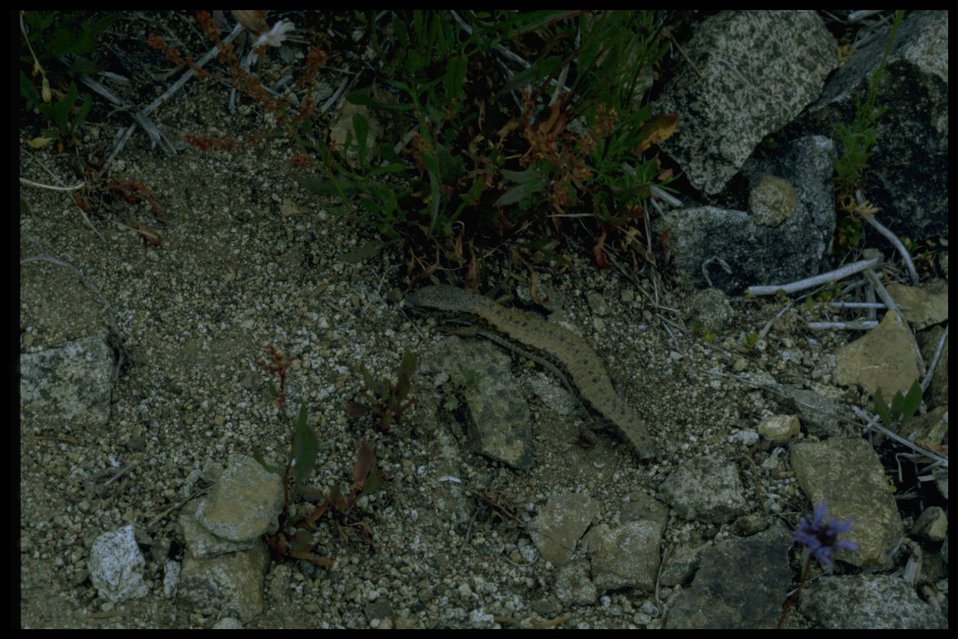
Lizard minus tail.